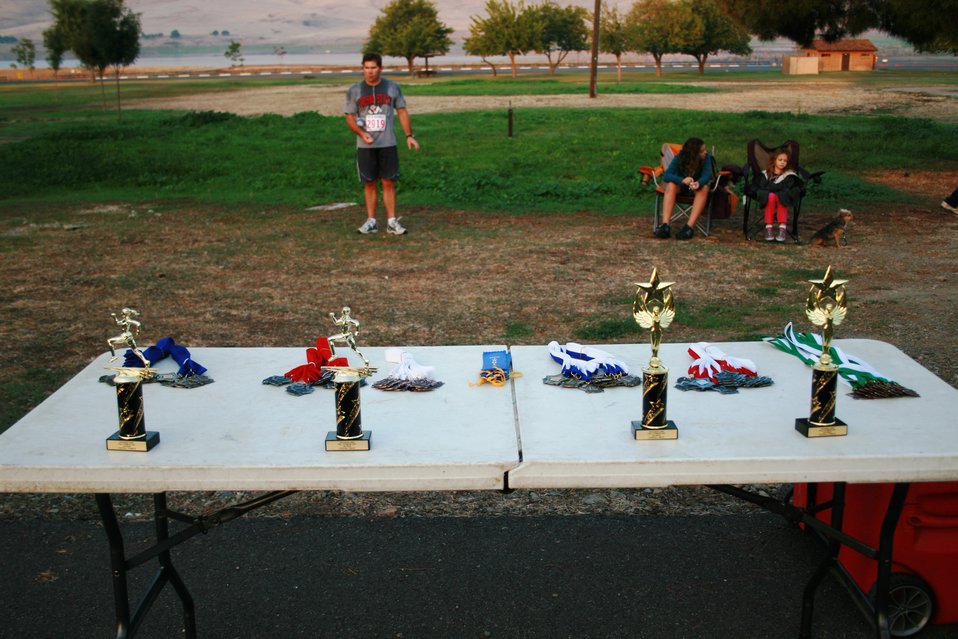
First-ever Fall Fitness Day held at Success Lake

Trophies and medals were handed out to the first, second and third place winners of the Fall Fitness Day 5-kilometer run at Success Lake in Porterville, Calif., Oct 22, 2011. Children who ran the fun run also received medals for their participation. The first-ever event, hosted by the City of Porterville Parks and Leisure Department and the U.S. Army Corps of Engineers Sacramento District, supports President Barack Obama’s America’s Great Outdoors initiative to re-connect Americans with the outdoors.